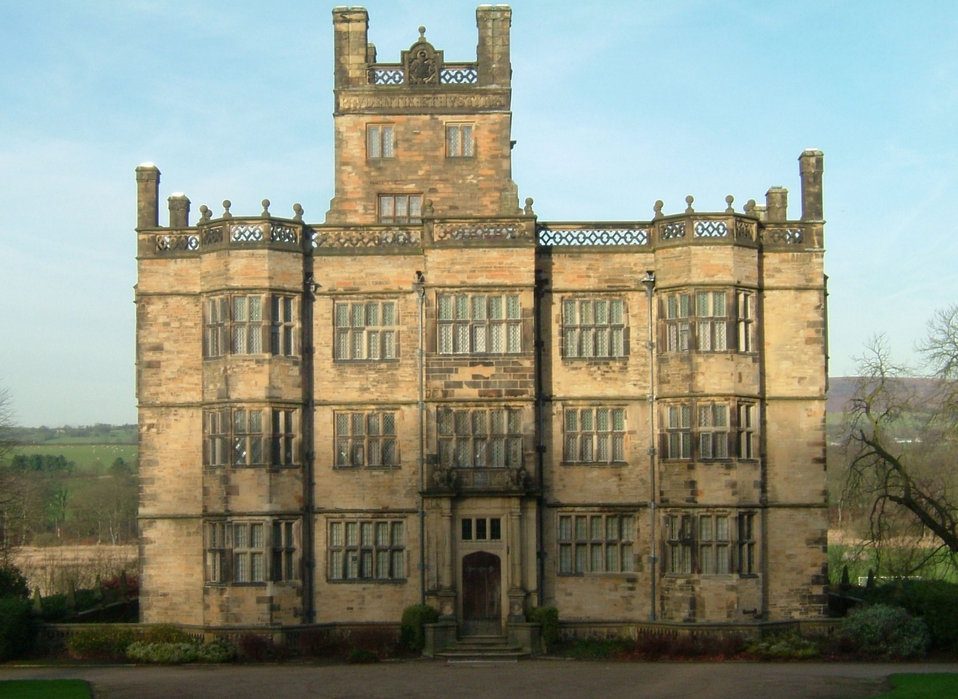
Gawthorpe Hall, Haburgham Drive, Padiham